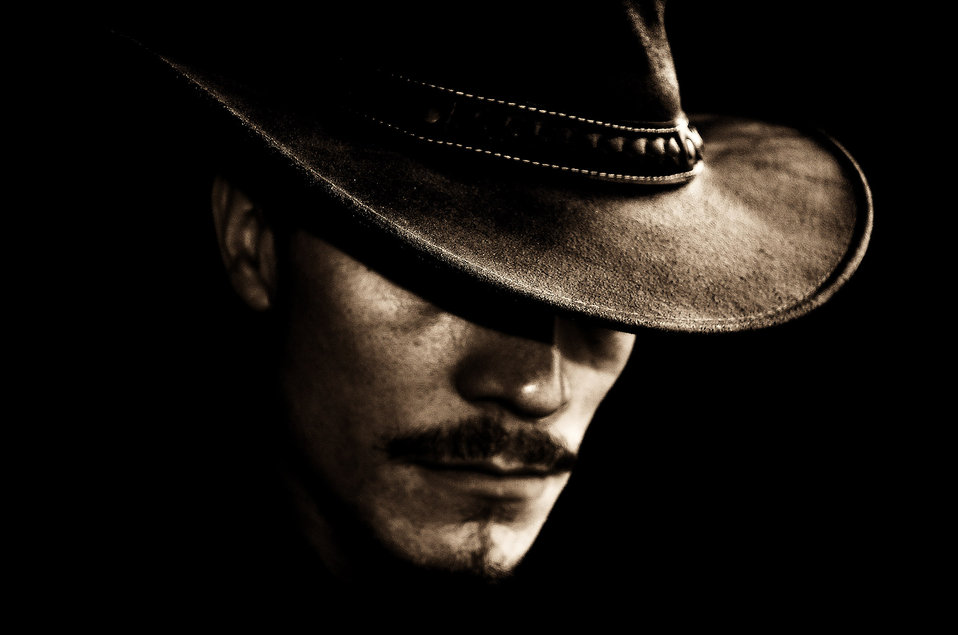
Man in the hat.